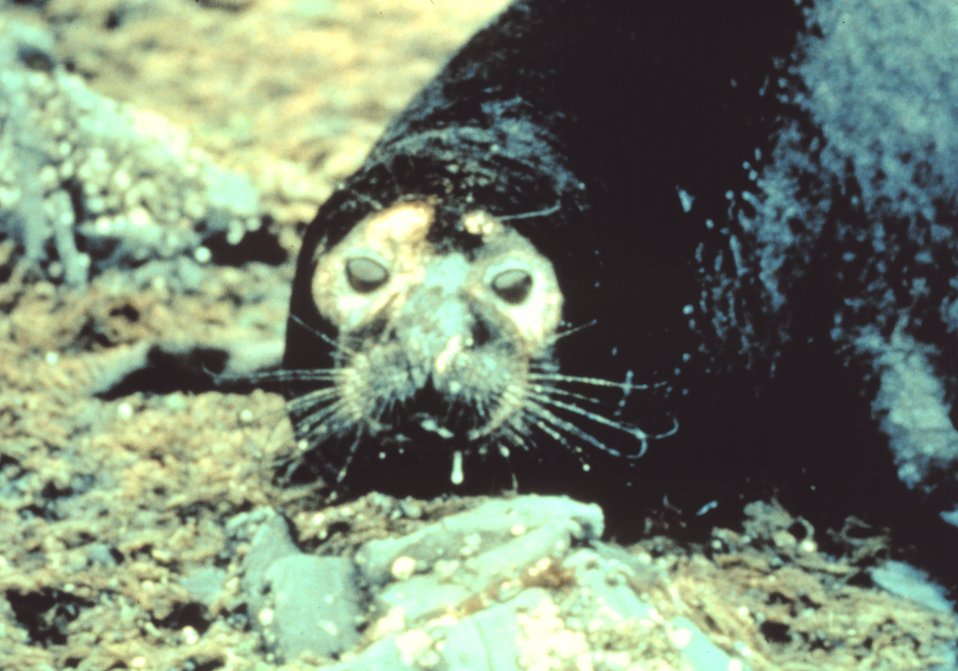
Oil covered seal